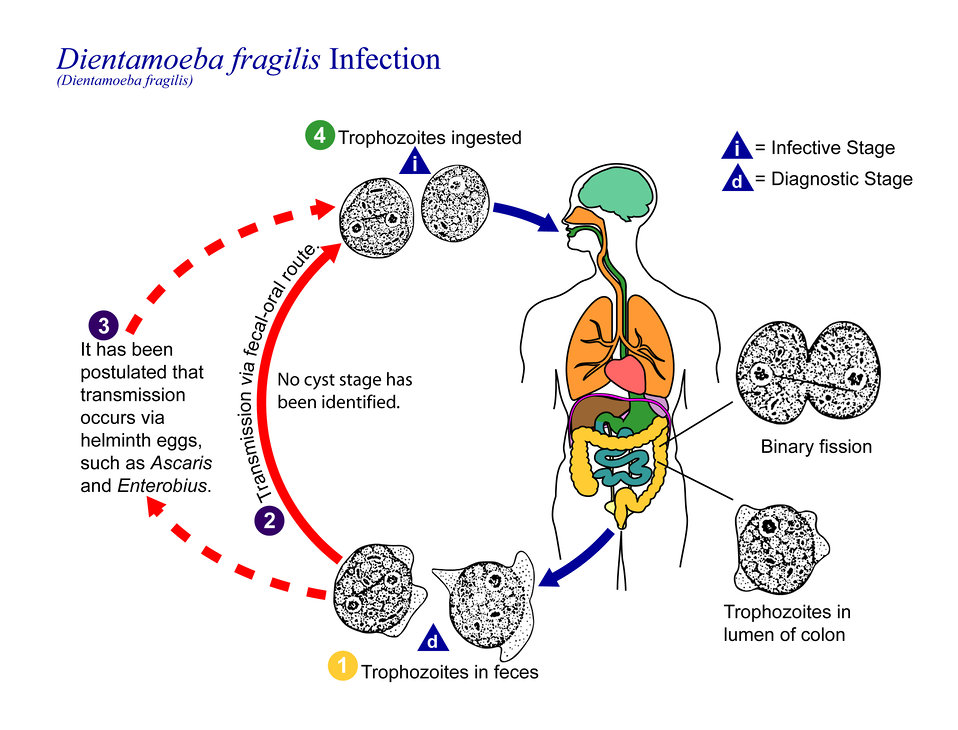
This is an illustration of the assumed life cycle of Dientamoeba fragilis, the cause of a protozoan parasitic infection.